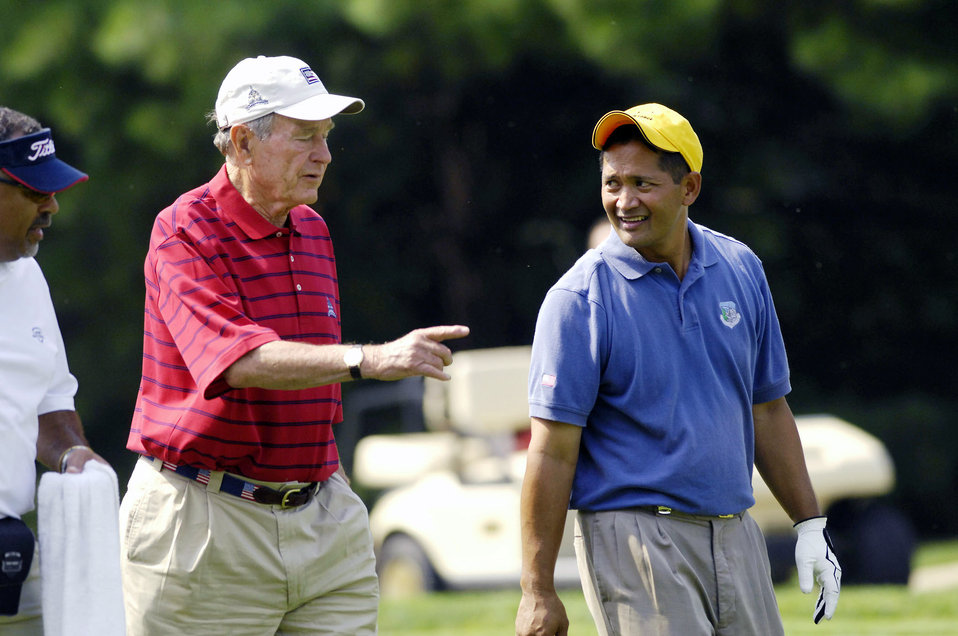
Airman tees it up with the best in the world

Tech. Sgt. Andy Amor walks down a fairway with former President George H.W. Bush during a Pro-Am tournament July 4 at Congressional Country Club in Bethesda, Md. Sergeant Amor was selected to represent the Air Force and was paired with Tiger Woods at the event. Mr. Woods was the event host as well as a contestant. Sergeant Amor is with the 316th Civil Engineer Squadron at Andrews Air Force Base, Md.